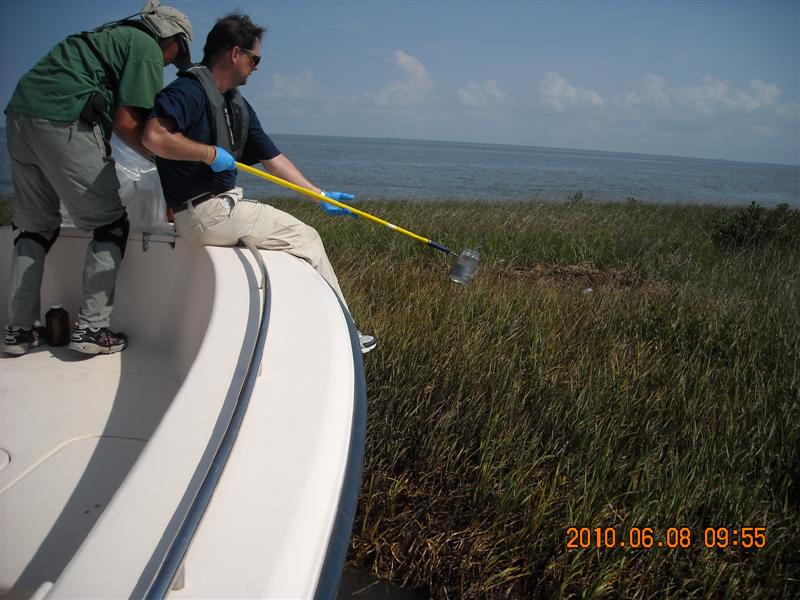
EPA Sampling along the Gulf coast

Water and sediment sampling along the Louisiana coast